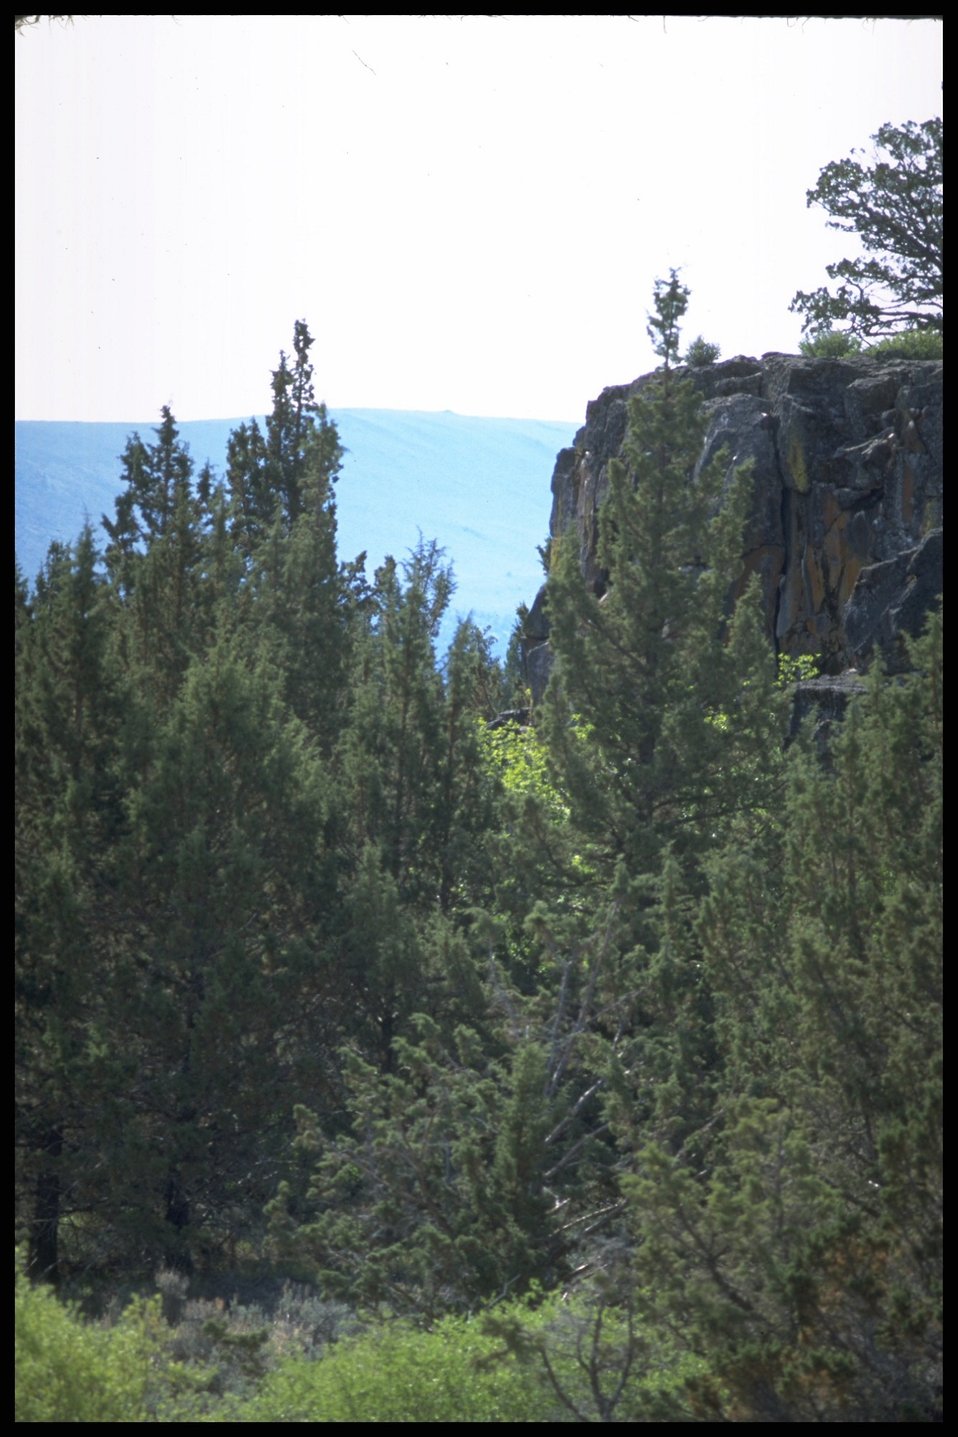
Scenic view of butte, Lakeview District.